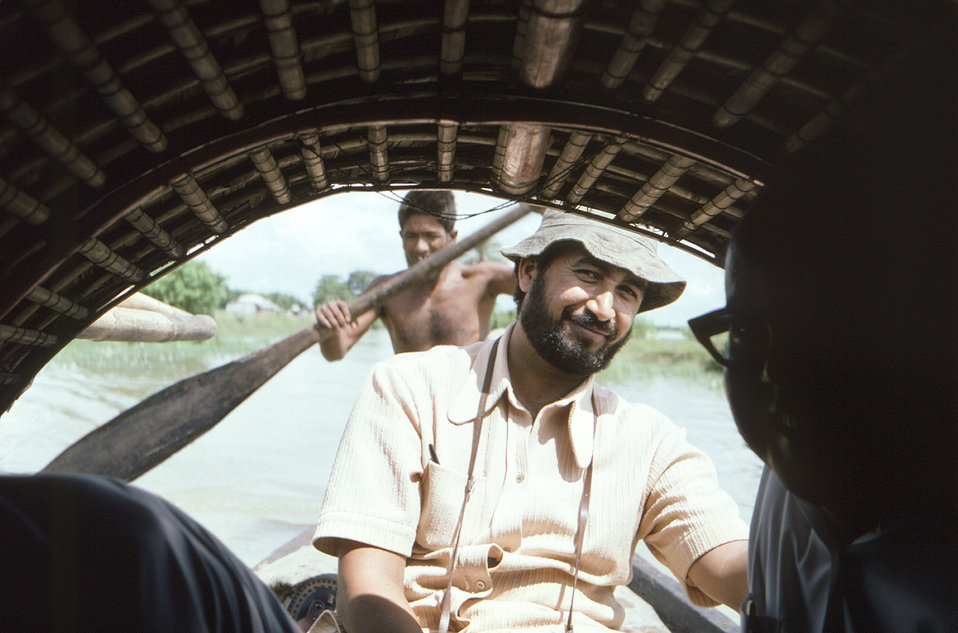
This 1975 photograph depicted public health practitioners, while aboard a riverboat in the north-eastern Bangladesh District of Sylhet. These scientists were using this mode of travel in order to get to remote villages, which were only accessible by boat, though still vulnerable to the ravages of smallpox.